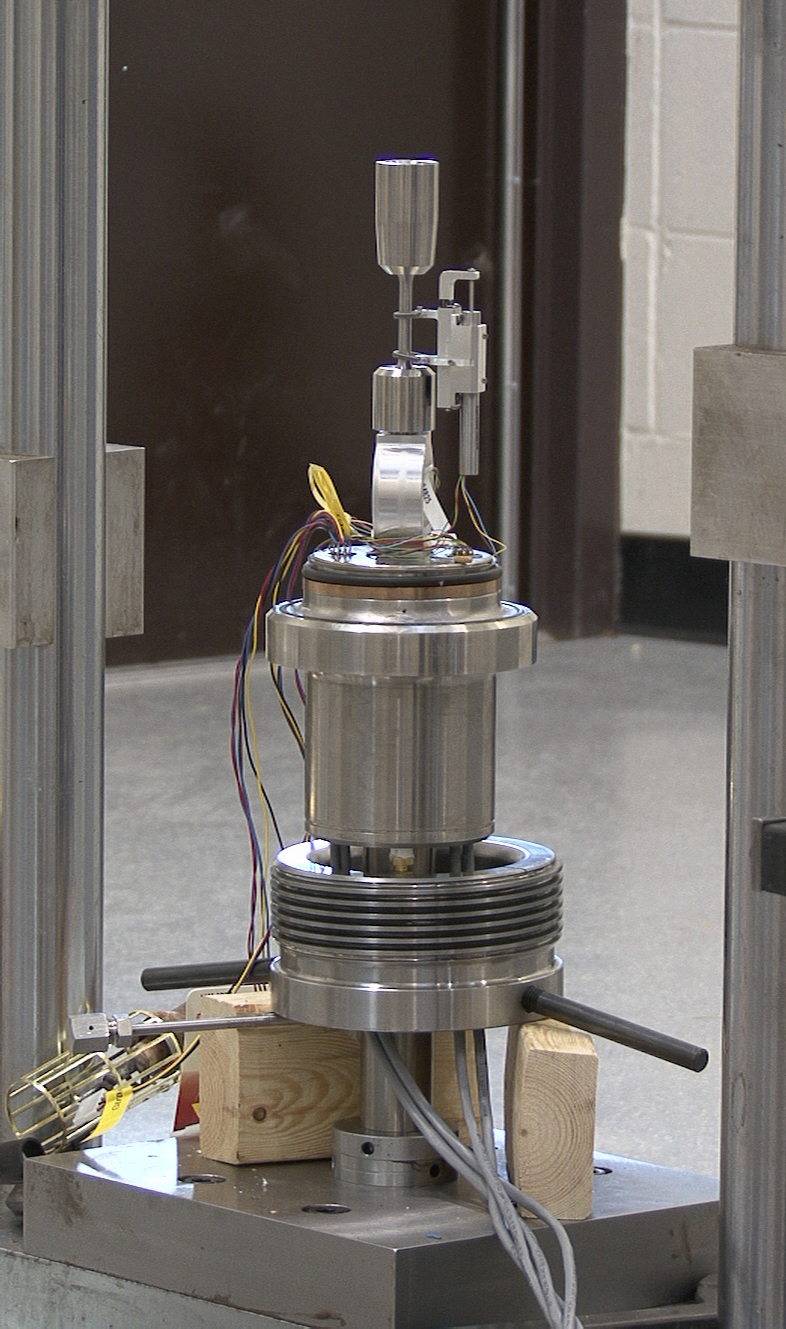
High pressure hydrogen test chamber

Located in a new, state-of-the-art NIST test facility, this specially designed chamber holds samples of pipeline, valve or delivery device materials for testing under pressure to determine their reaction to hydrogen.